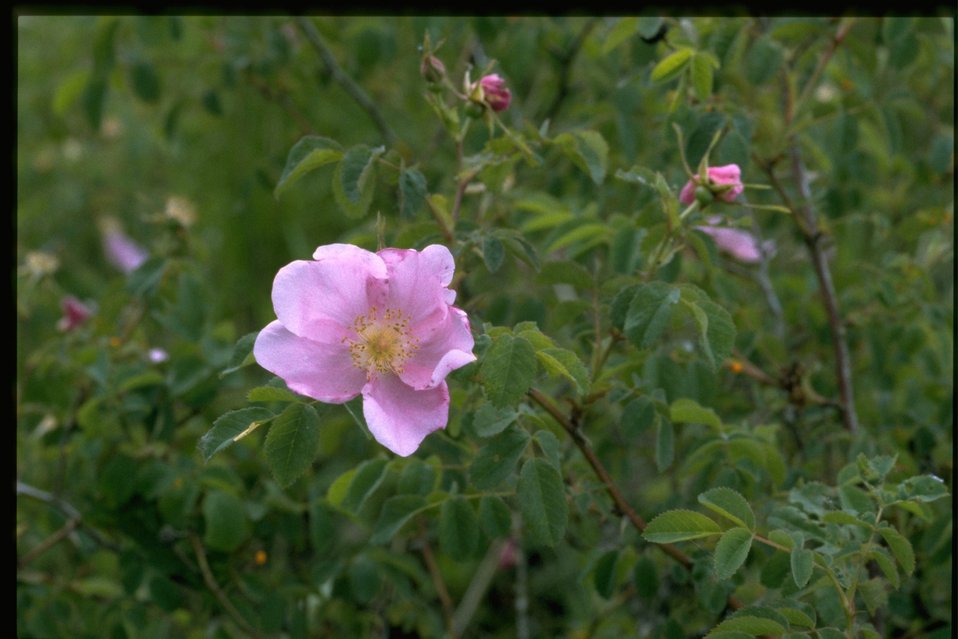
Medium shot of Rosa nutkana.